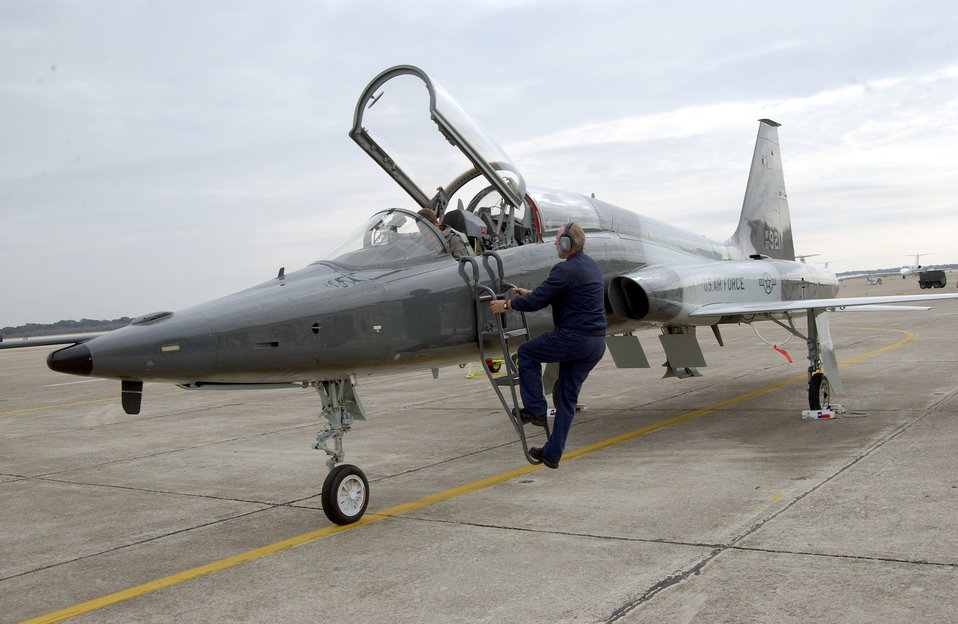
The Talon arrives

RANDOLPH AIR FORCE BASE, Texas -- Crew chief Dave Long greets pilot Lt. Col. Chris Loeppke on Jan. 21 after chalking in the first T-38C Talon aircraft to arrive here.